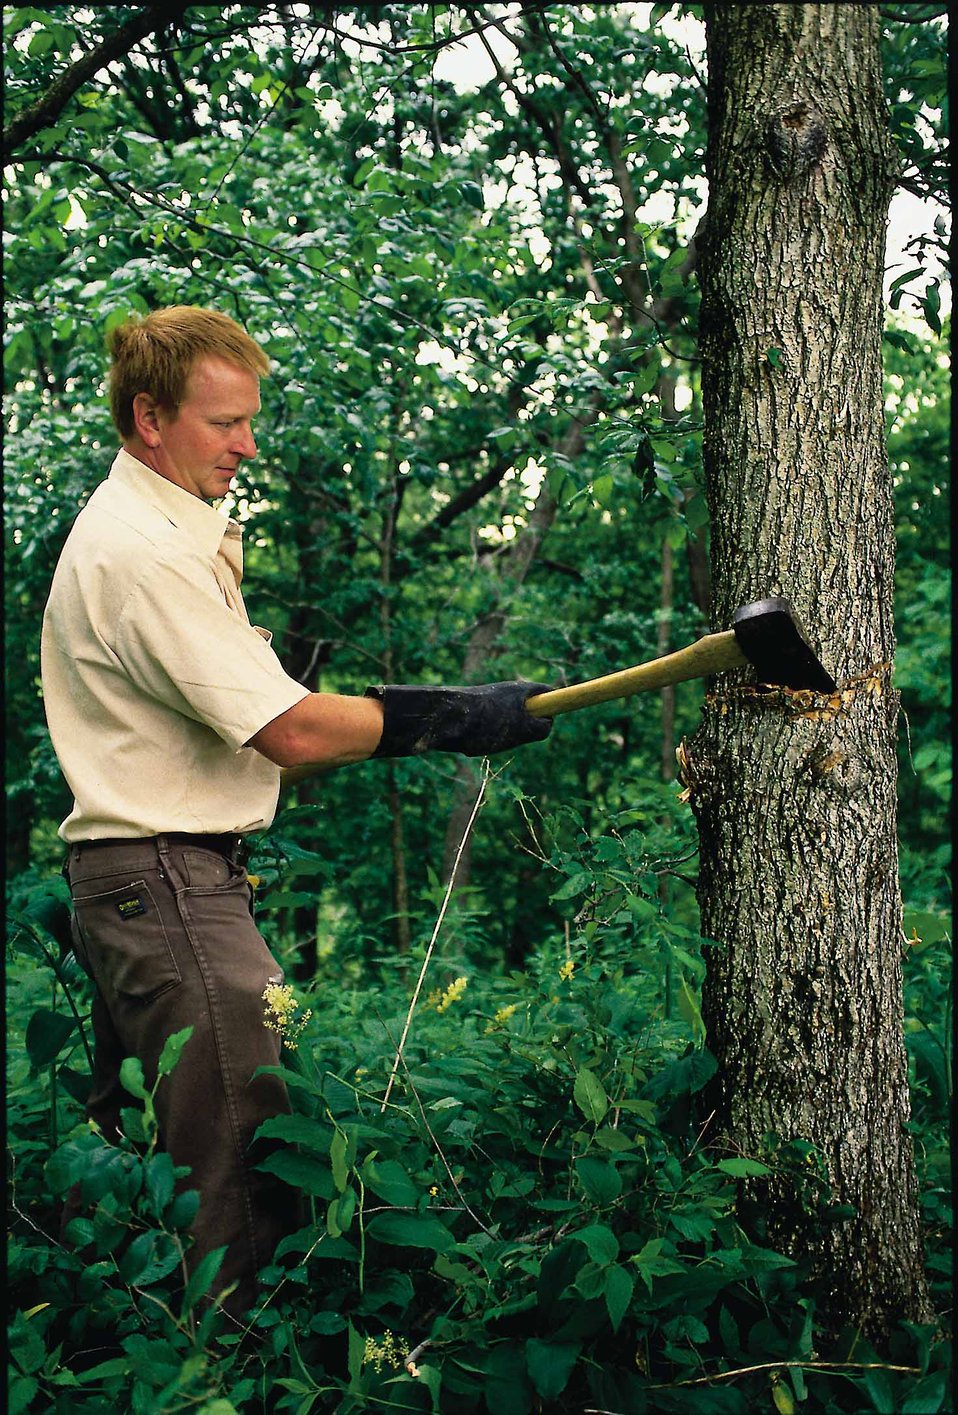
Timber management in southeast Iowa.